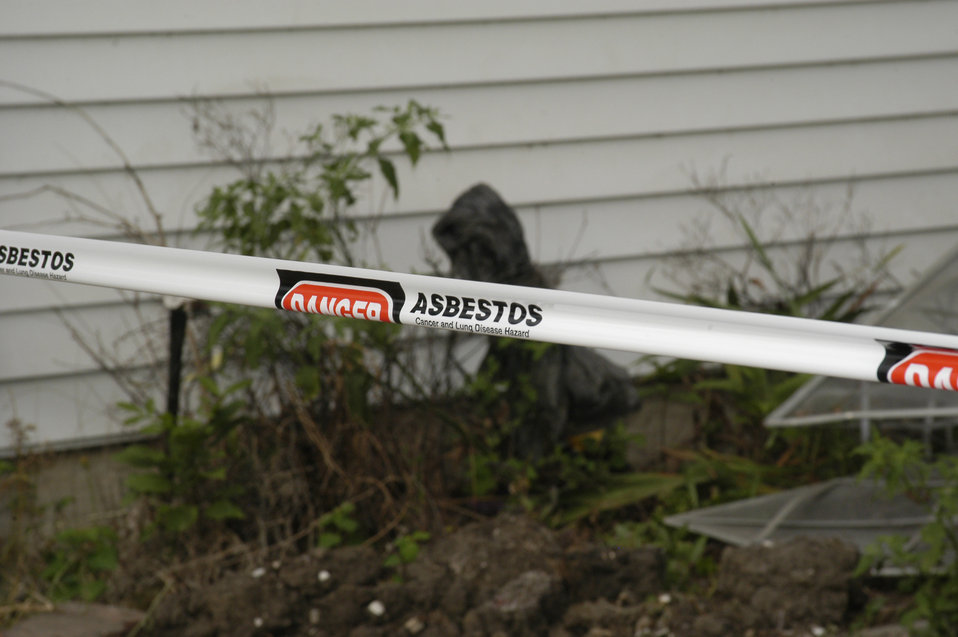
Many of the older homes and buildings in the New Orleans, LA, locale that were destroyed by Hurricane Katrina contained asbestos material (i.e. asbestos roofing tiles, transite siding, insulation, floor tiles, and popcorn ceilings). The U.S. Army Corps of Engineers (USACE) was mandated to follow strict environmental protocols in the demolition of these homes that were designated Regulated Asbestos Containing Material (RACM) demos. The “hot zone” was designated with tape and all non-essential personnel were required to stay on the safe side of the tape.